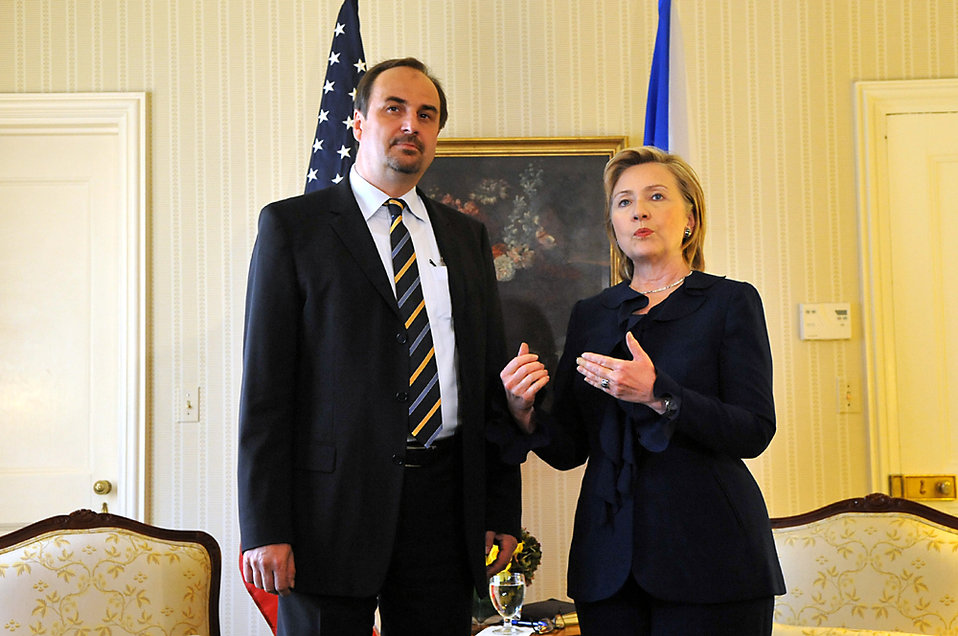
UNGA 2009: Secretary Clinton Meets With Czech Republic Foreign Minister

U.S. Secretary of State Hillary Rodham Clinton meets with Czech Republic Foreign Minister Jan Kohout at the Waldorf Astoria hotel during the 64th Session of the UN General Assembly in New York City, New York September 21, 2009.